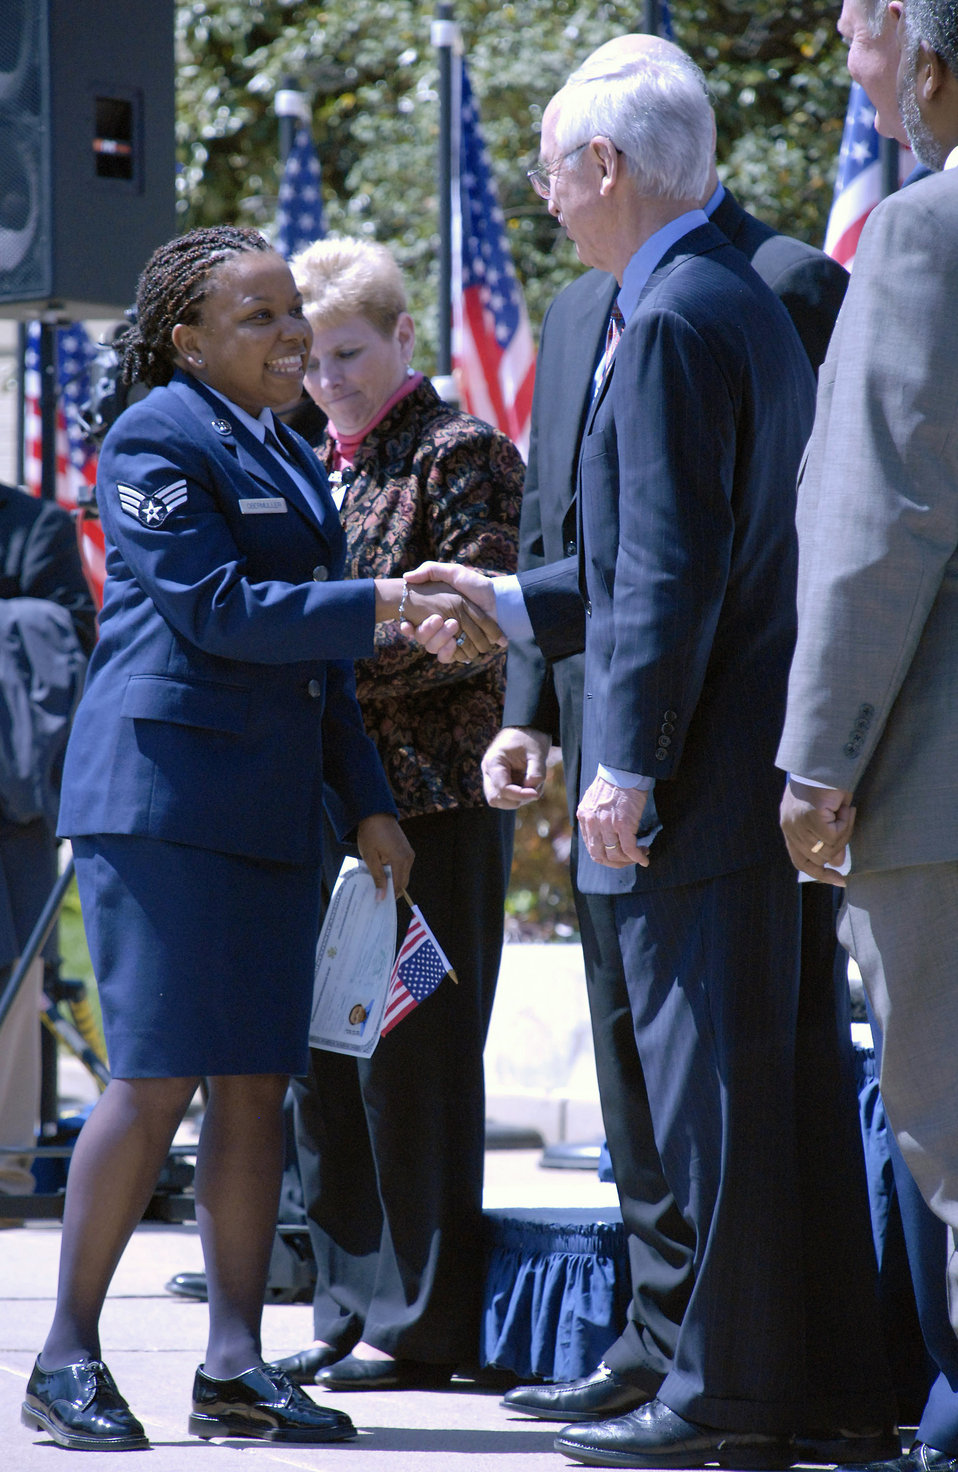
Airman becomes citizen in Pentagon ceremony

Senior Airman Cassandra Obermuller Brandon (left) accepts her naturalization certificate from Deputy Secretary of Defense Gordon England during a naturalization ceremony April 14 in the Pentagon's center courtyard. More than 20 servicemembers became American citizens during the ceremony. Airman Brandon, who was born and raised in Guyana, moved to the United States with her father in 1991 and joined the Air Force Reserve in 2002.